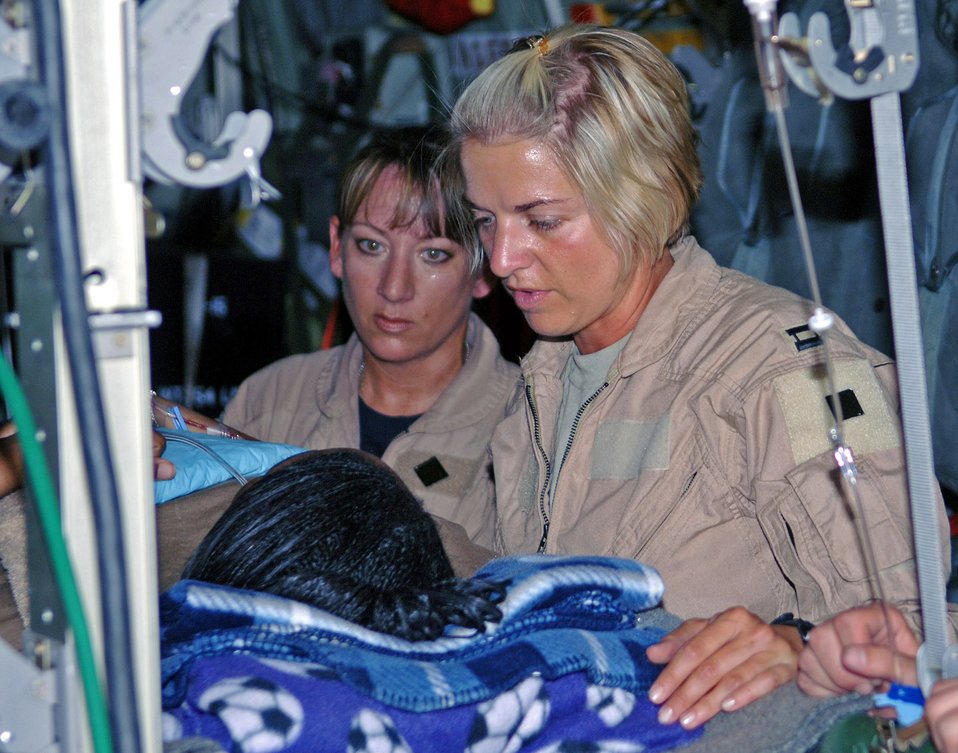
Aeromedical evacuation teams ready to help anytime

Master Sgt. Theresa Sheheen (left) and Capt. Michelle Mulberry tend to a litter patient on an aeromedical evacuation mission June 22 from Bagram Air Base, Afghanistan. Sergeant Sheheen is a 455th Expeditionary Aeromedical Evacuation Flight medical technician and Captain Mulberry is a 455th EAEF flight nurse. They both are deployed from the Wyoming Air National Guard's 187th Aeromedical Evacuation Squadron from Cheyenne, Wyo.